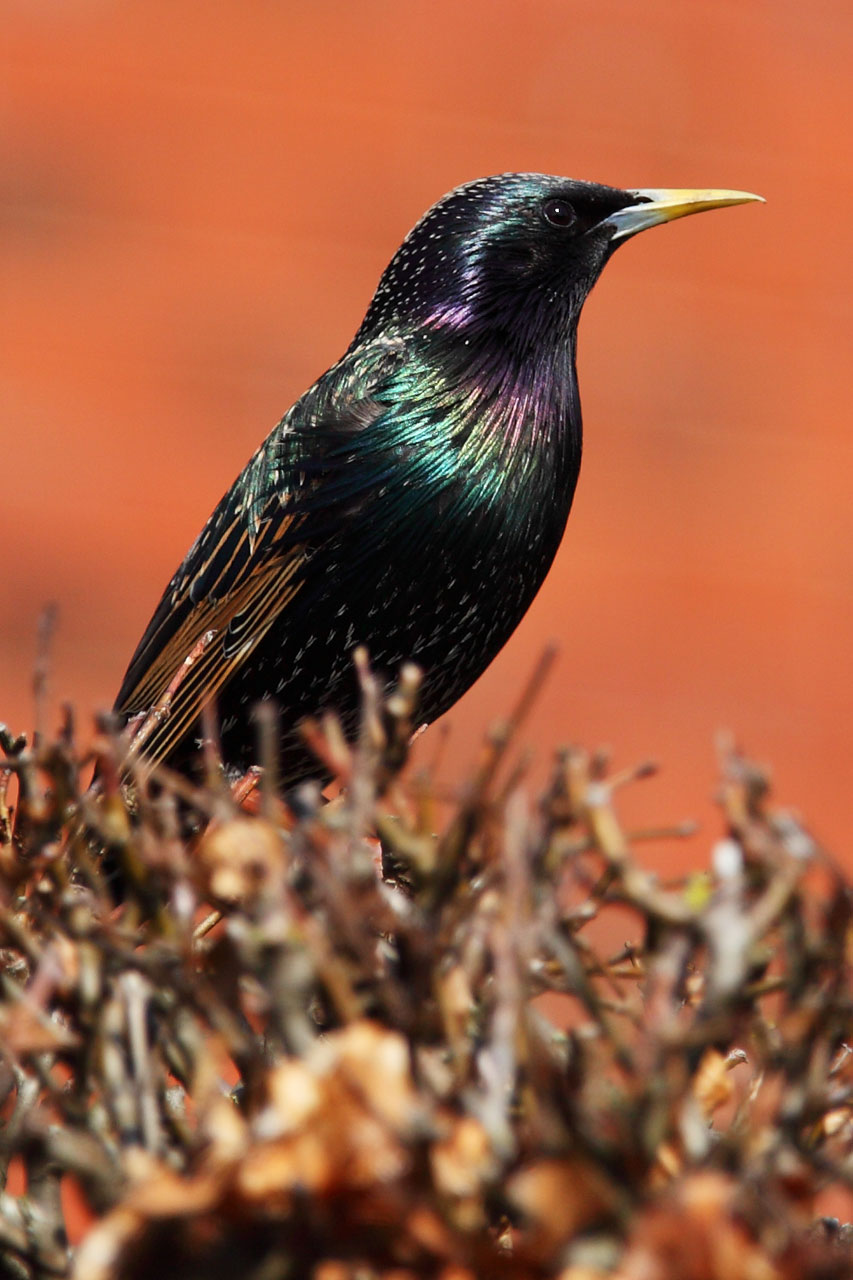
Starling bird sitting on fence.